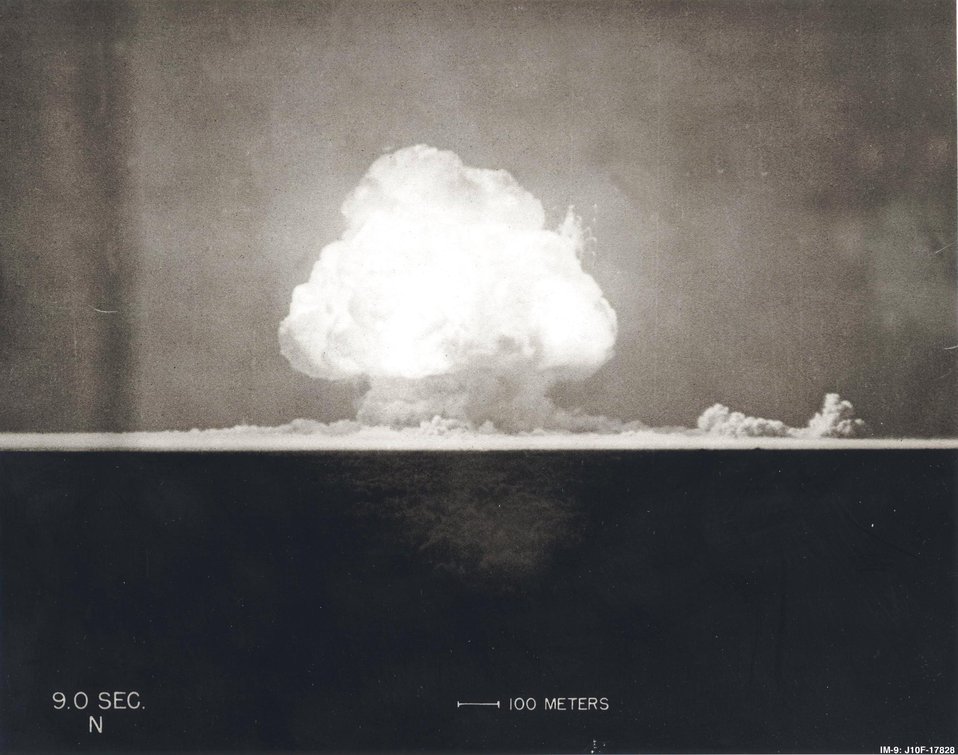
TRINITY AT 09.0